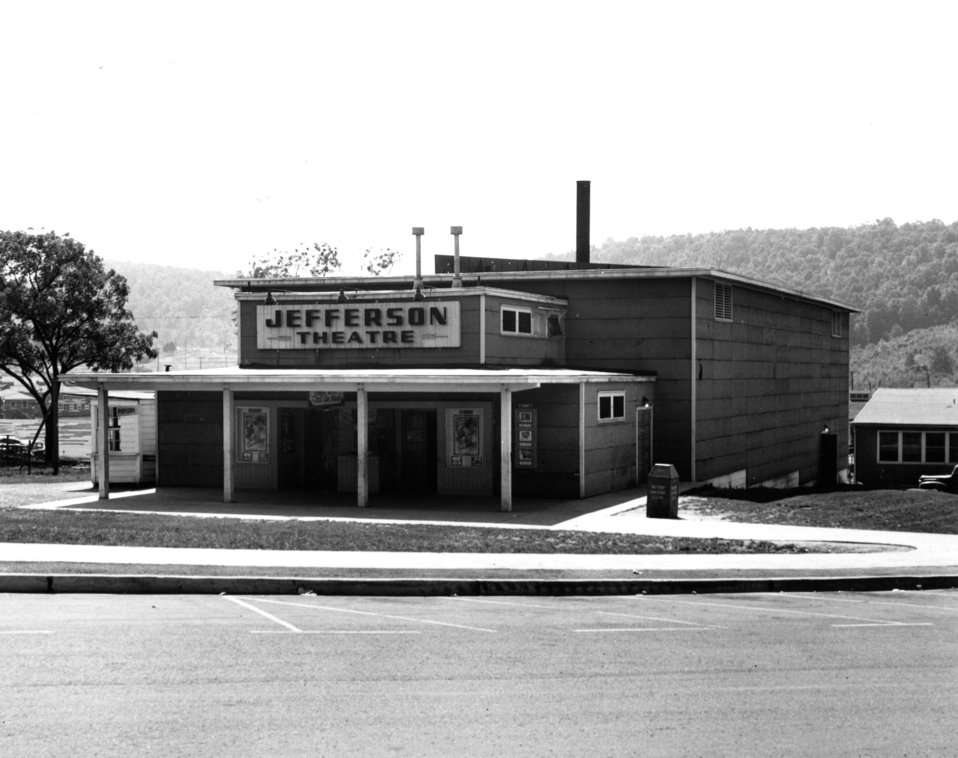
Business activity at Oak Ridge